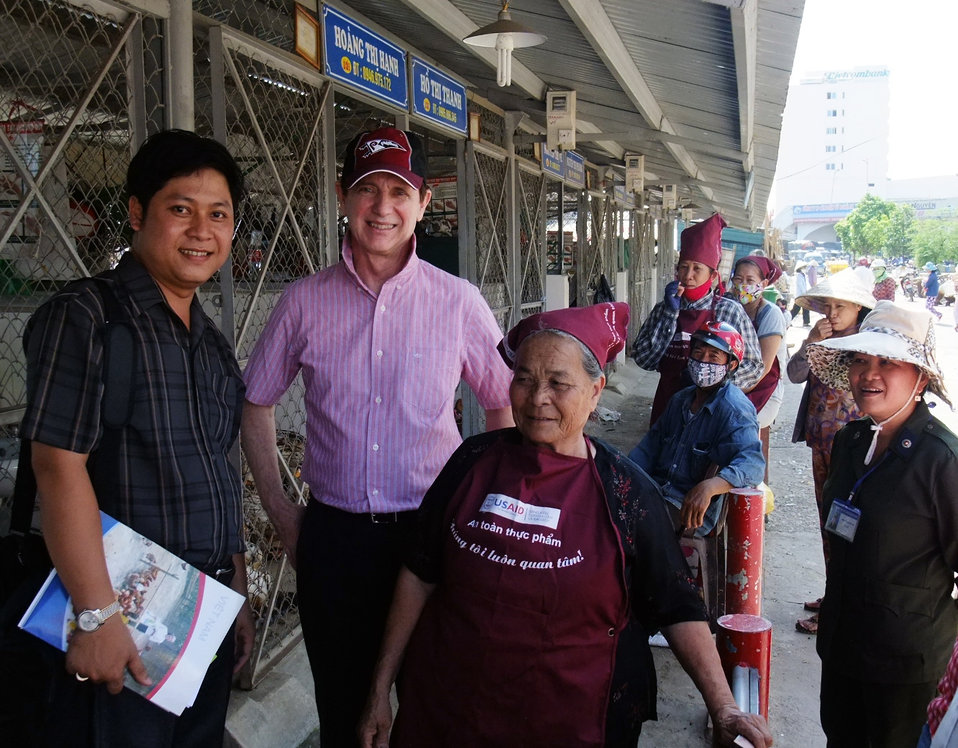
USAID Mission Director Francis Donovan visits Dong Ha Poultry Market